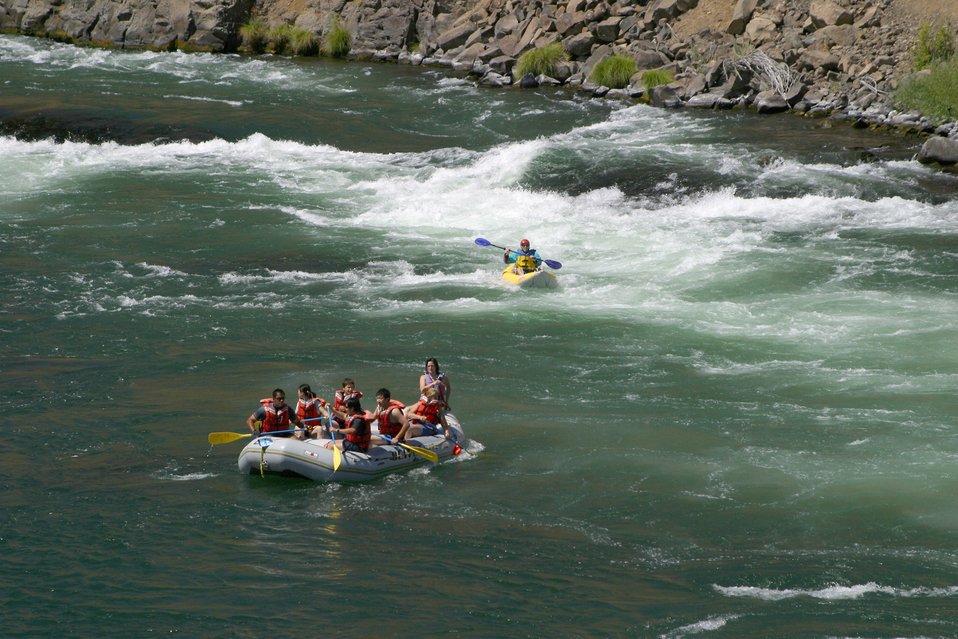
Wapinitia Rapids class III, has large roller coaster waves. 7/26/03 Pelton Dam 3600 cfs: Moody Rapids 4300 cfs.